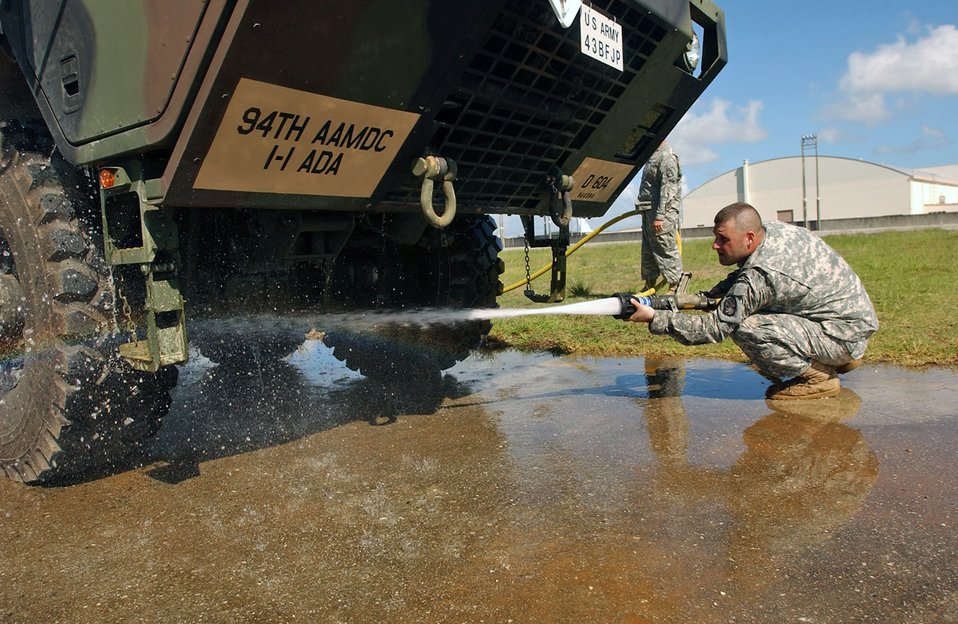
Kadena prepares for typhoon

An Army Soldier from the 1-1 Air Defense Artillery Brigade washes a Hemmet along with the Patriot Advanced Capability missile equipment in preparation for Typhoon Man-Yi July 11 at Kadena Air Base, Japan. The 1-1 ADA stored their most valuable equipment in a hangar near the Kadena AB flightline in preparation for Typhoon Man-Yi, the first typhoon of the year for Okinawa. Before having them stored, both the equipment and vehicle are washed at Papa ramp to prevent foreign object damage.